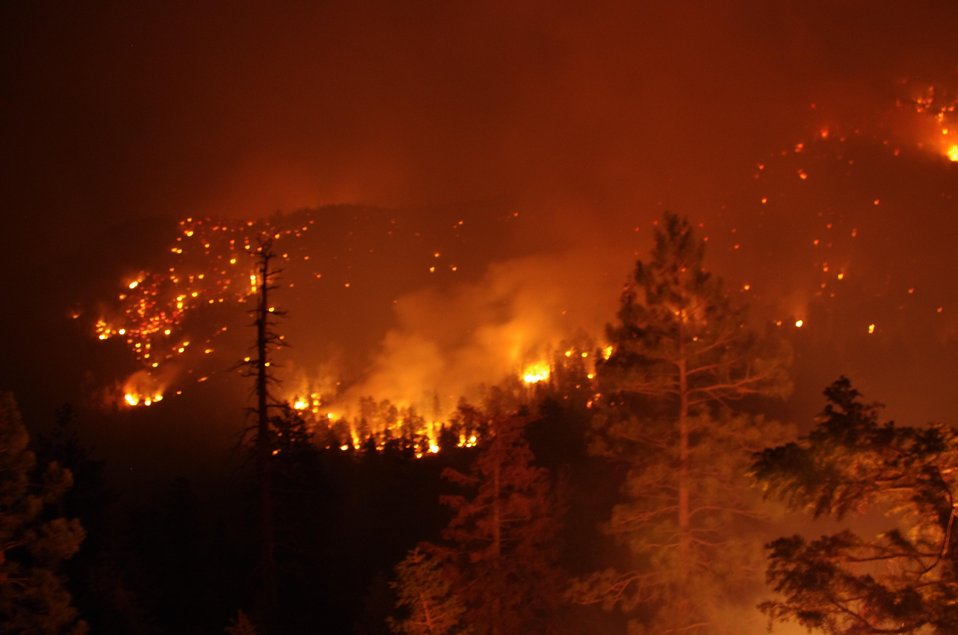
Carpenter fire burns at night in the Rainbow area of the Toiyabe National Forest near Humboldt, NV. The Carpenter Fire in the Toiyabe National Forest near Humboldt, NV was caused by a lightning strike on Jul. 1, 2013. The fire has consumed nearly 27,881acres and is presently 70% contained.